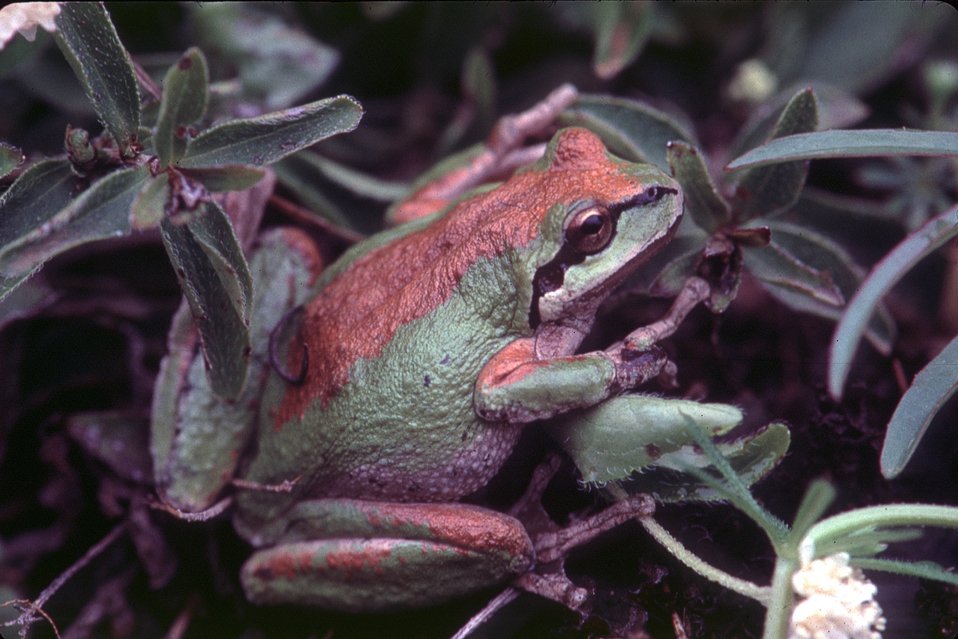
Pacific Tree Frog Hyla regilla Jeff Dillman, Medford Pacific tree frog near Grave Creek on the Medford District.2000